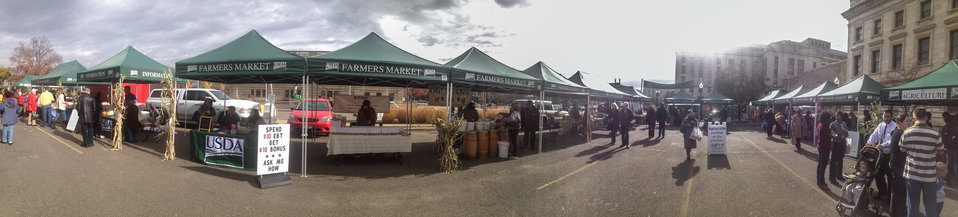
Virtual panorama of the U.S. Department of Agriculture (USDA) farmers market final outdoor market of the season and Harvest Festival at the USDA Whitten Building east parking lot in Washington, DC, on Friday, November 22, 2013.